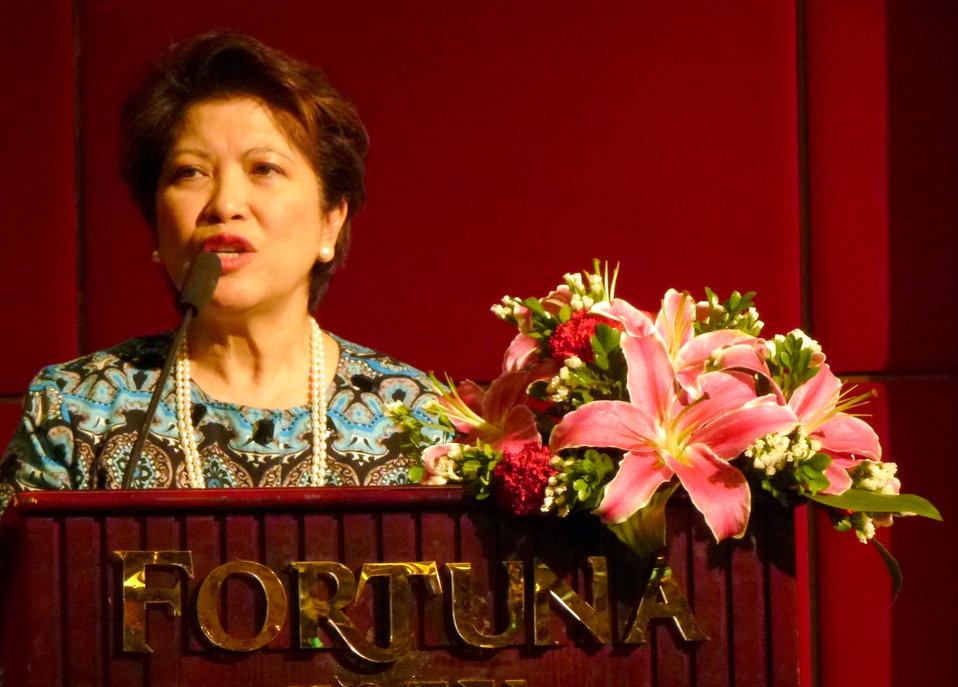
Payment for Forest Environmental Services Workshop

Chato Calderon, USAID Senior Climate Change Advisor

Hanoi, August 20, 2013